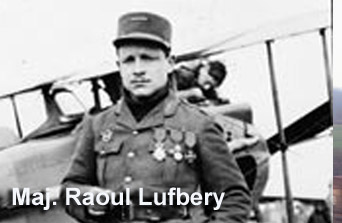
Maj. Raoul Lufbery

Raoul G. Lufbery earned 17 aerial victories with the French in World War I. Americans in the French Aviation Service were of immense value to France. Their greatest contribution was realized in 1918 after most had transferred to the Air Expeditionary Forces.